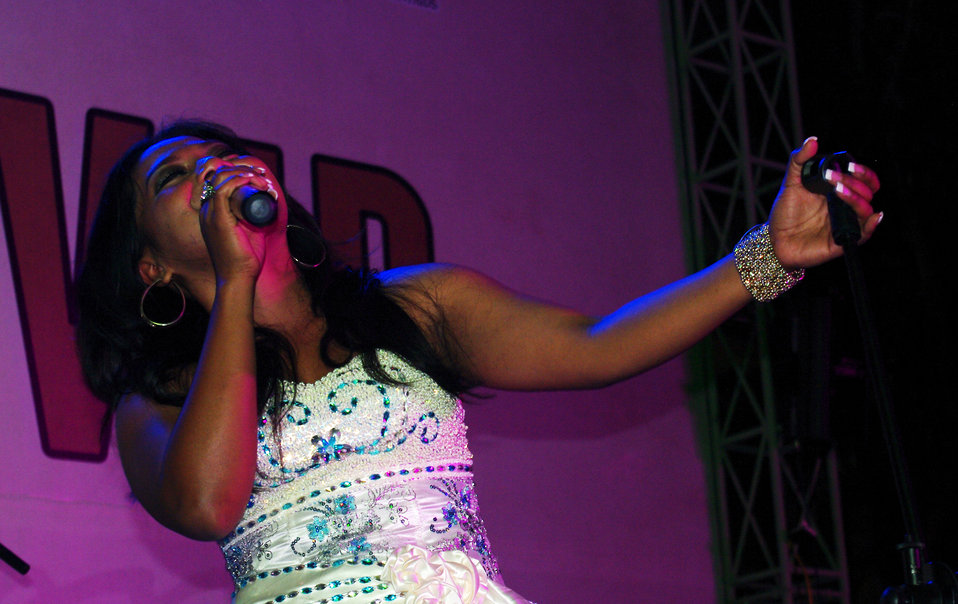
PEPFAR, U.S. Embassy Host Dengue Fever Concert in Hanoi